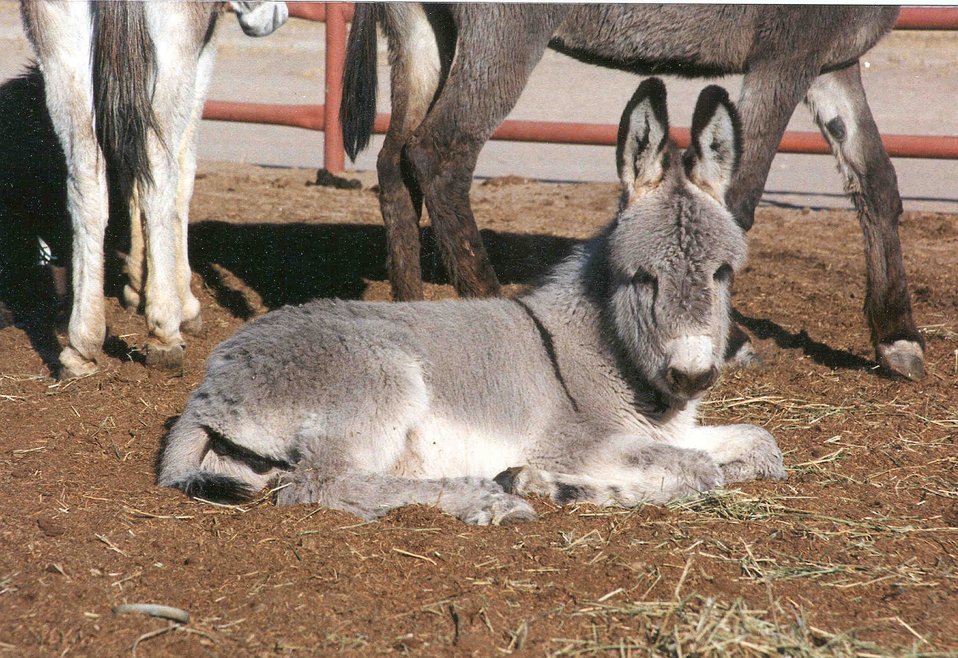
A baby burro being adopted at the Wild Horse and Burro adoption in Yuma